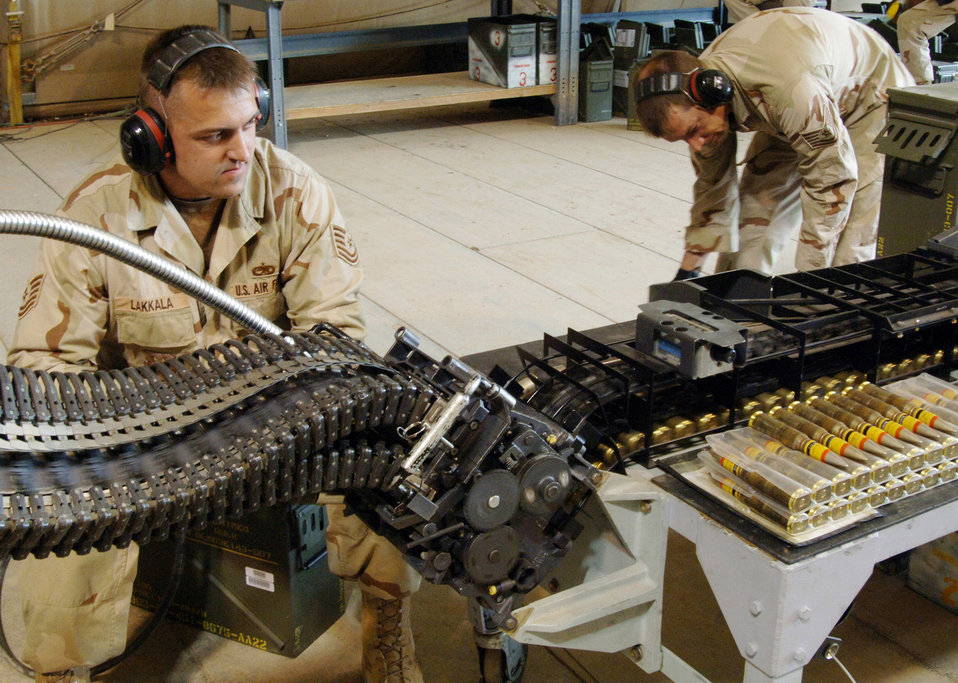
New ammo improves pilot safety, reduces collateral damage

Tech. Sgt. Chris Lakkala (left) regulates the rate of the replenisher tray as it feeds 20mm cannon rounds into the universal ammunition loading system in the ammo shop at Balad Air Base, Iraq. Tech. Sgt. J.C. Whitney prepares more rounds to load through the replenisher. Both Airmen are deployed from Aviano AB, Italy.